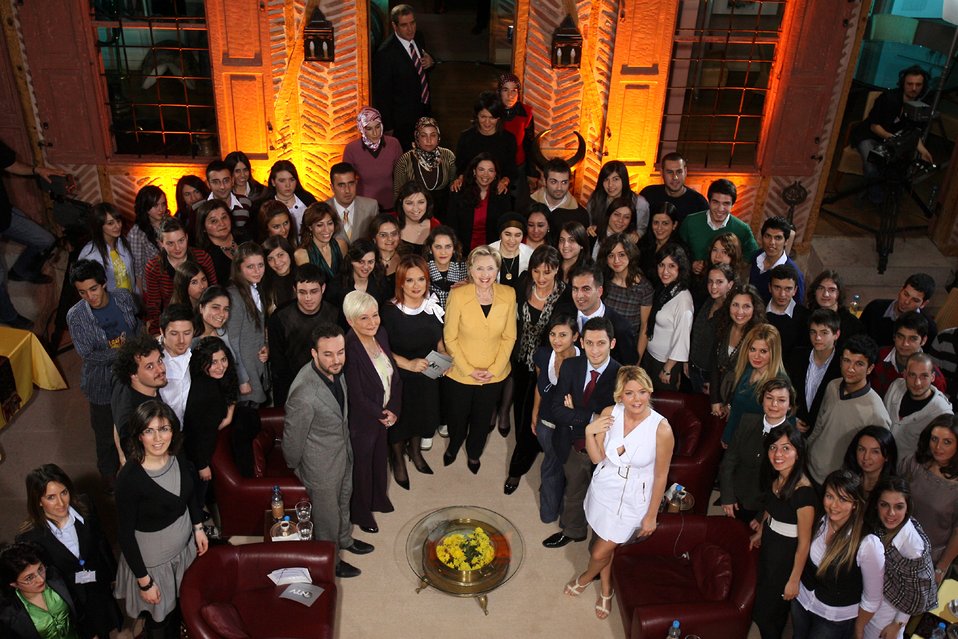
'Come and Join Us” Television Program

U.S. Secretary of State Hillary Rodham Clinton with the hosts and audience of NTV’s “Come and Join Us” television program at Rahmi Koc Museum, Ankara, Turkey March 7, 2009.